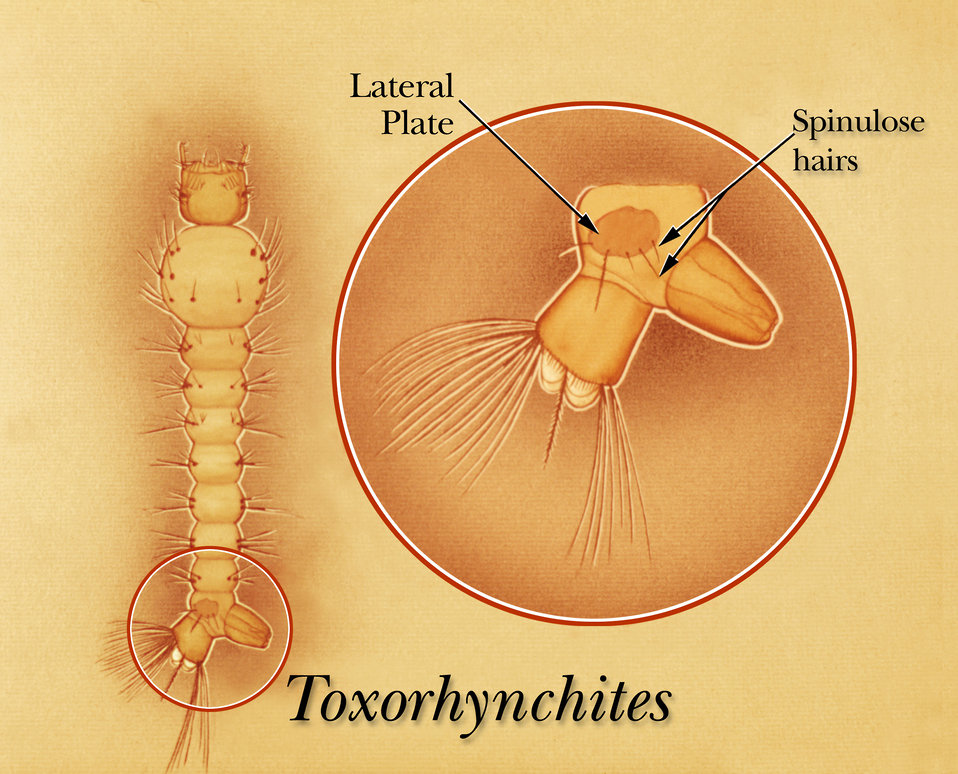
An illustration identifying the lateral plate and spinulose hairs of a Toxorhynchites mosquito larva.